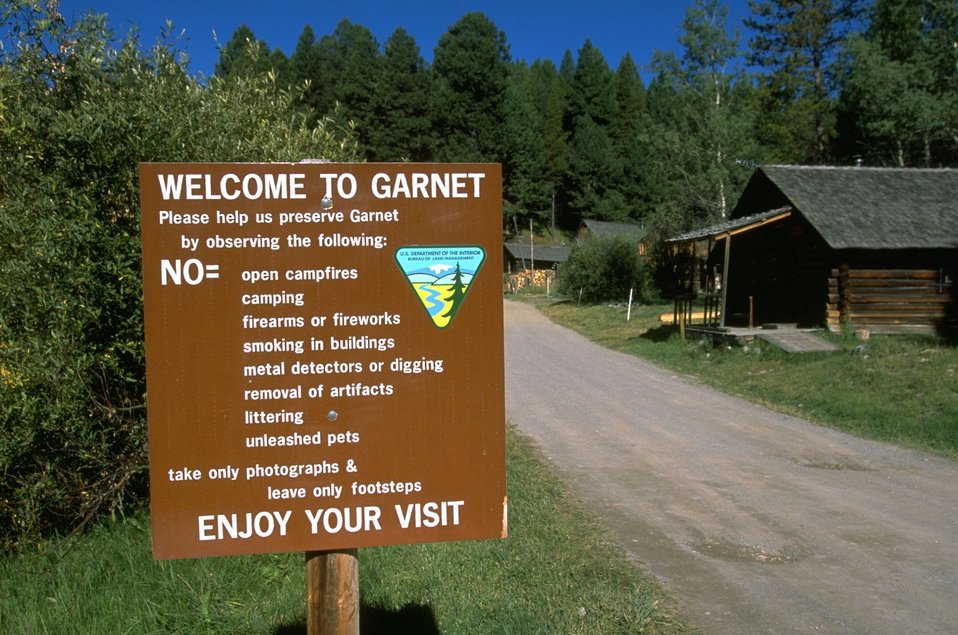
Garnet Ghost Town with sign containing use rules